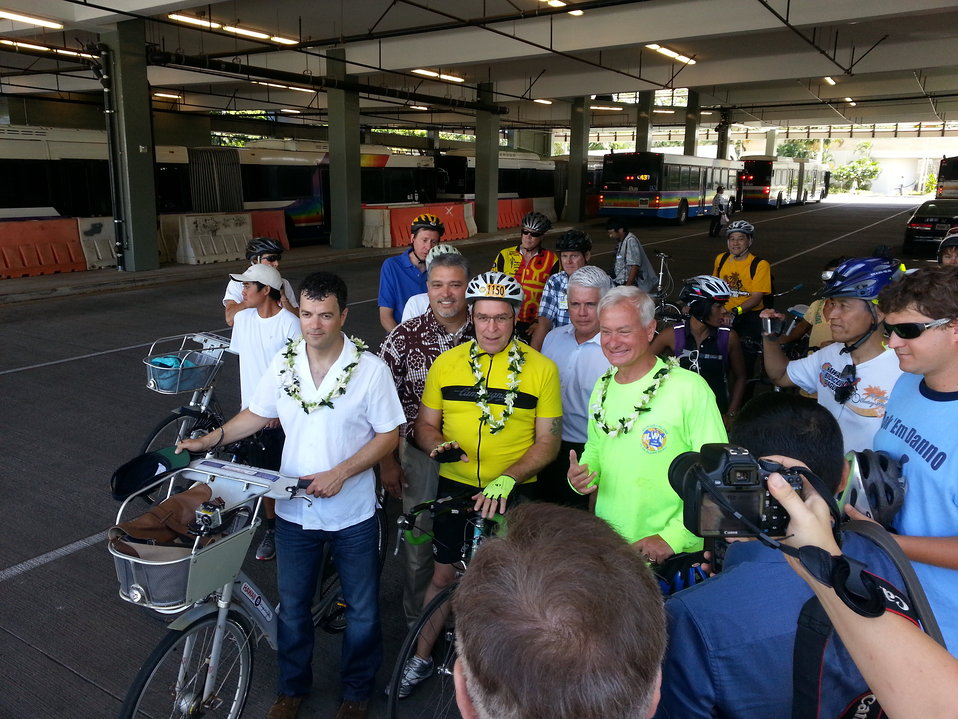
EPA R( Administrator's Visit to HI

During a recent trip to Hawaii, our Regional Administrator from the Pacific Southwest, Jared Blumenfeld, joined Honolulu Mayor Kirk Caldwell, bicycling advocates, and federal and state officials for a bike ride around Honolulu to emphasize the importance of multi-modal transportation connectivity. When he’s back in San Francisco, Regional Administrator Blumenfeld regularly rides his bike from his home to our office.